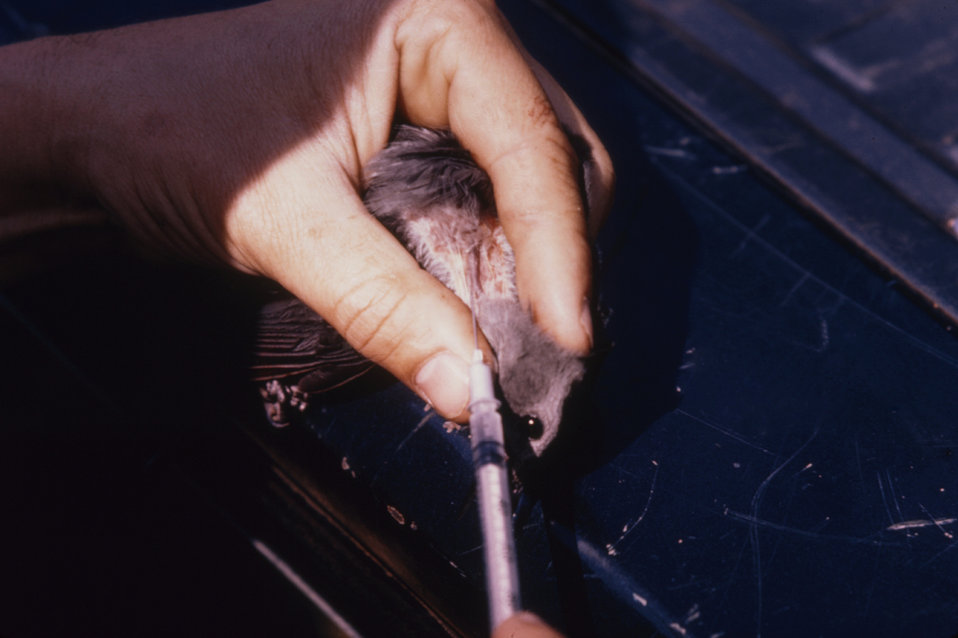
Here blood is being extracted from the jugular vein of this bird, and will later be tested for the presence of arbovirus.